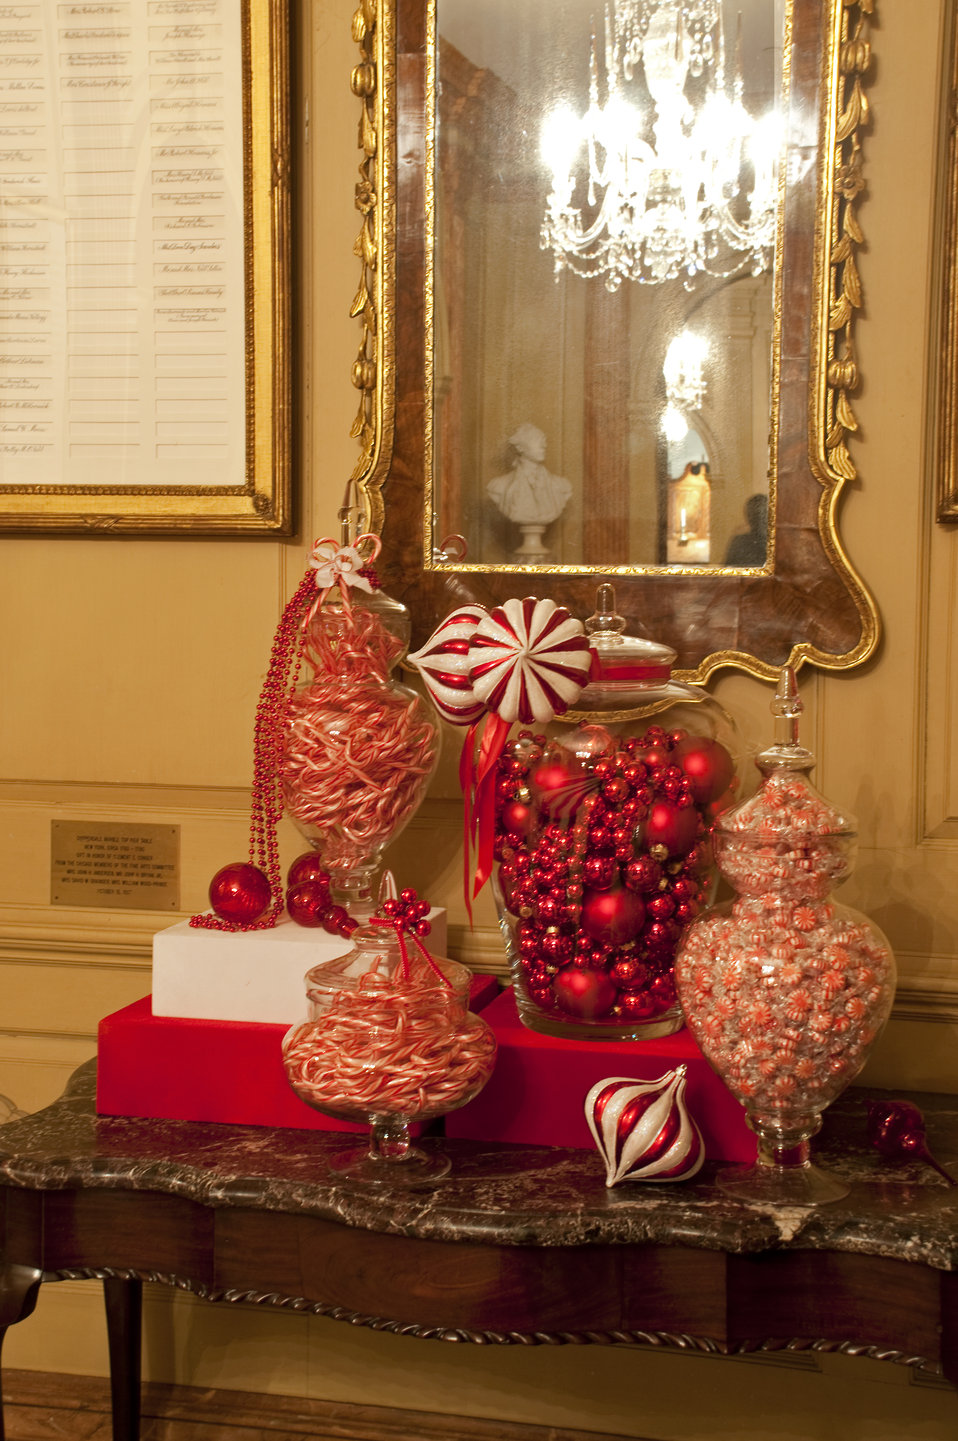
The U.S. Department of State Partners With Time Inc. and InStyle To Decorate the John Quincy Adams State Drawing Room

The U.S. Department of State partners with Time Inc. and InStyle to decorate the Diplomatic Reception Rooms for the Holidays in December 2010. Pictured in this photo is the John Quincy Adams State Drawing Room.